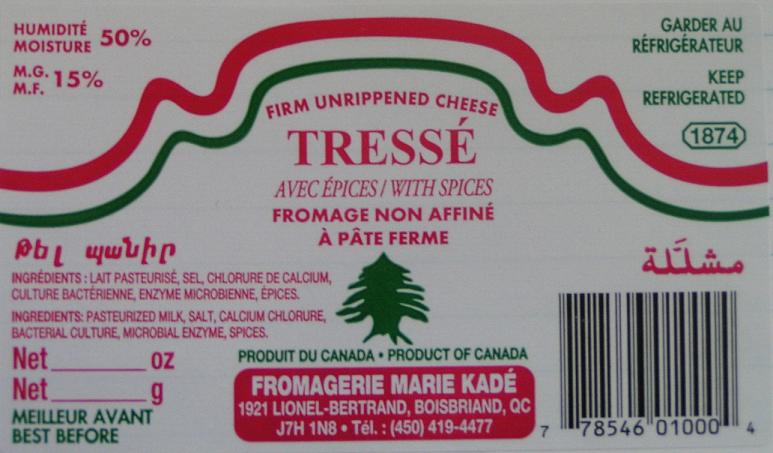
RECALLED - Cheese

December 23, 2011 - Kradjian Imp Co. Recalls Cedar Brand Tresse Cheese and Cedar Brand Shinglish Cheese Because of Possible Health Risk.